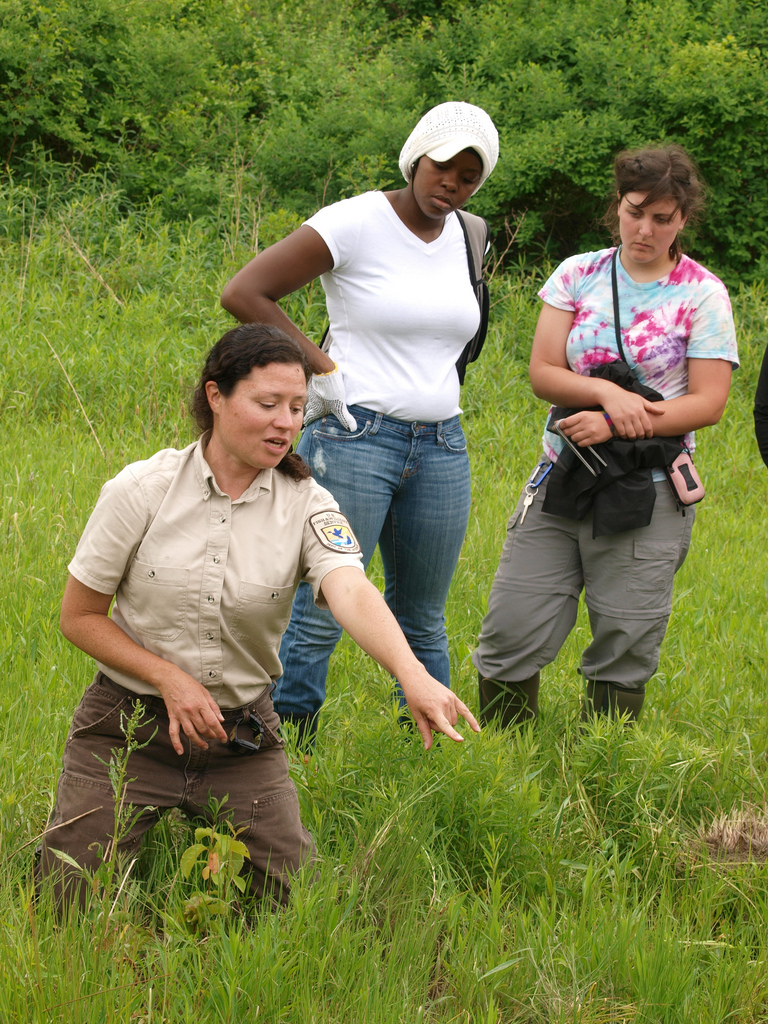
A teachable moment in the field

U.S. Fish and Wildlife Service